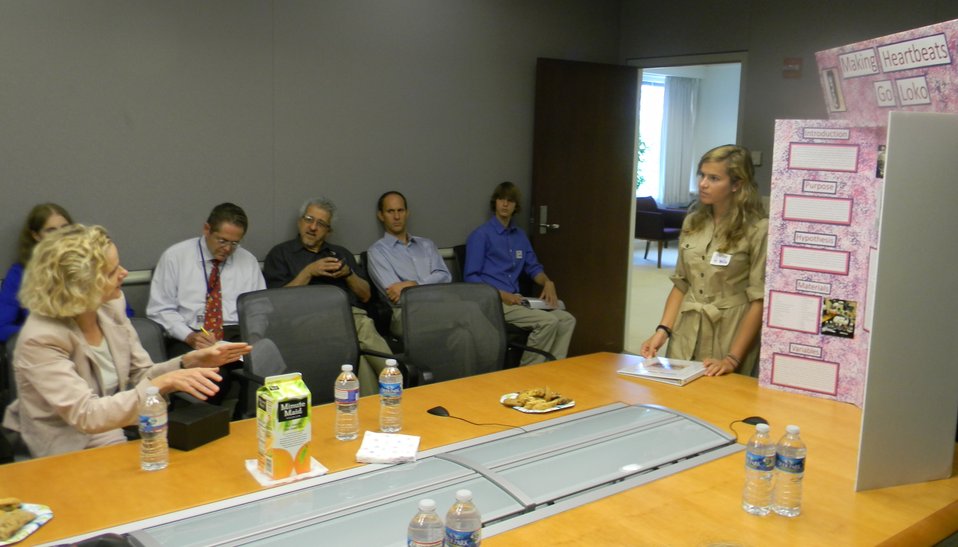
Volkow and Schumacher6

Dr. Nora Volkow (NIDA Director) and Darby Kathryn Schumacher (2nd place winner) discuss Schumacher's project